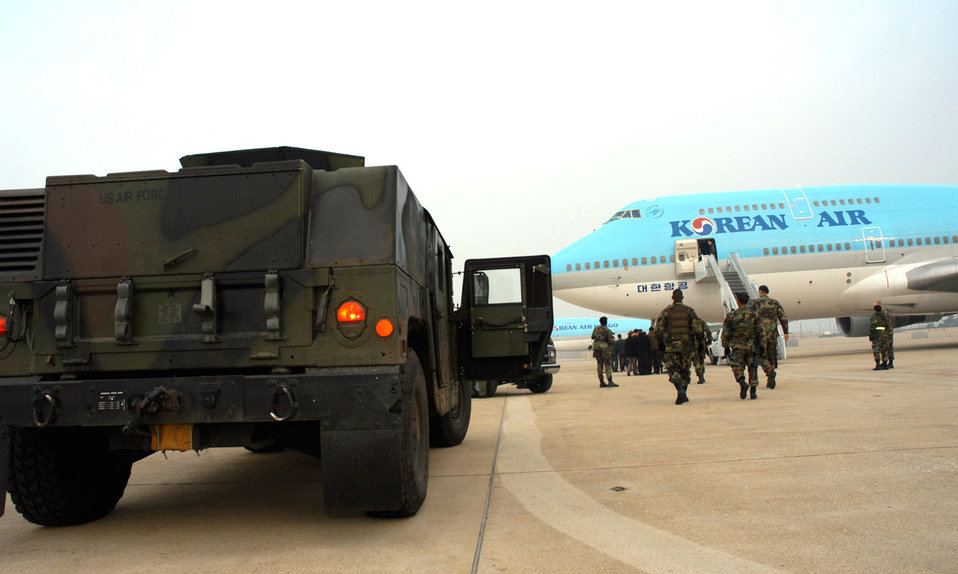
Two Korean Airline jets divert to Kunsan

Medical and security personnel rush to a Korean Airlines 747 after it diverted to Kunsan Air Base, South Korea, from Incheon International Airport due to foggy weather conditions. The passenger airliner, with 274 people on board, diverted to Kunsan to seek immediate medical attention for a 65-year old Korean man. He was transported to Kunsan Medical Center in downtown Kunsan City. The passengers were offered bottled water as they waited to take off, and the aircraft was refueled by Air Force personnel.